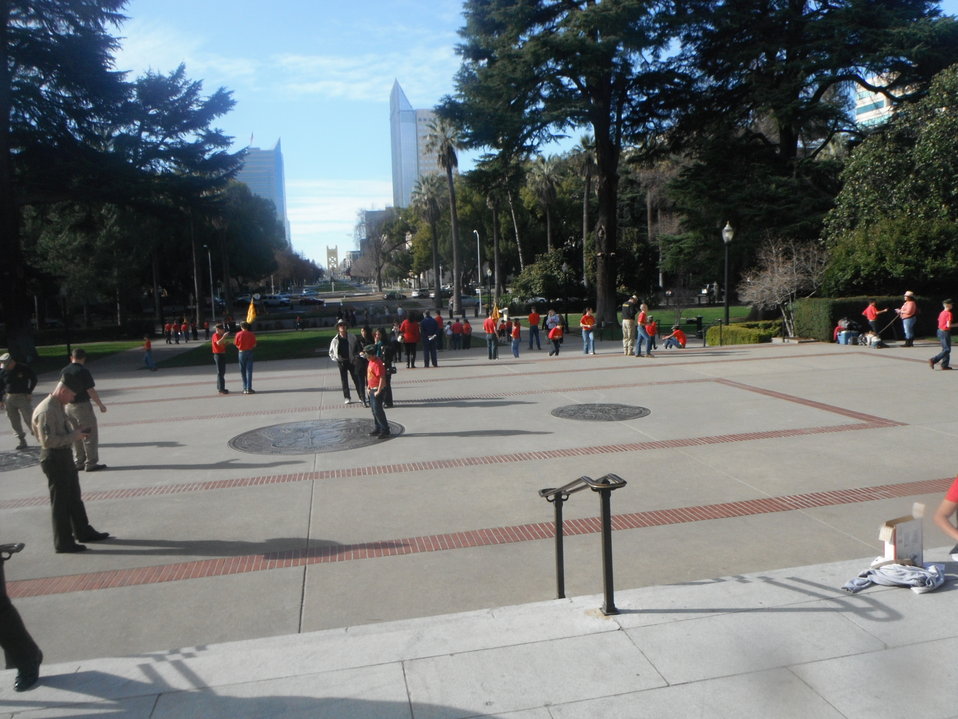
Ray Jacobs Young Marines, NDFW 2013

Sacramento, Ca. National Drug Facts Week Events, Feb. 2, 2013.